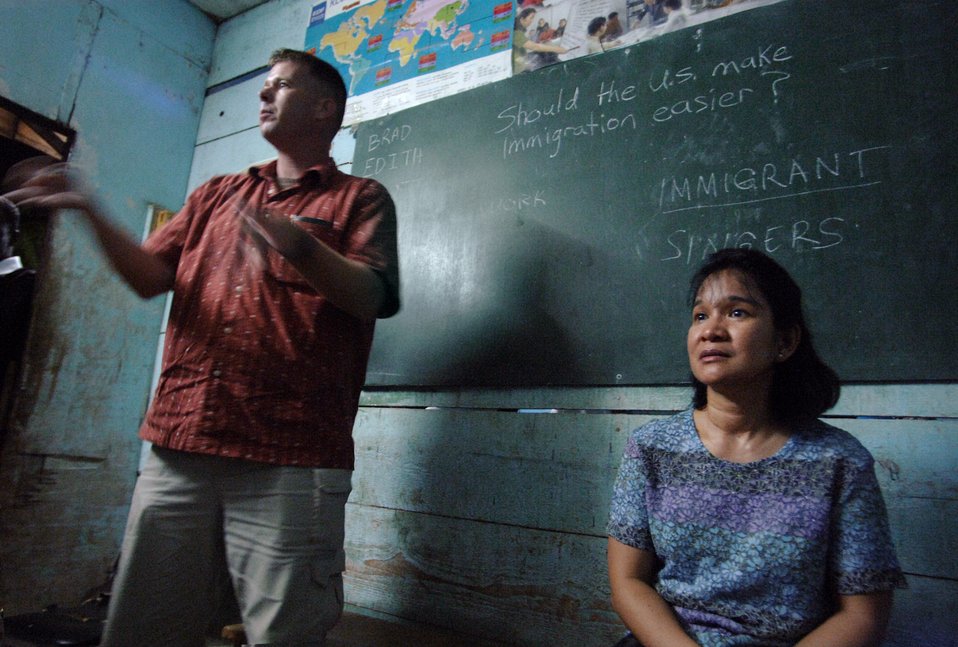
Americans, Djiboutians build relationships

Air Force Senior Master Sgt. Editha Garcia and Navy Petty Officer 1st Class Brad Hysell, who are deployed to Camp Lemonier, Djibouti, volunteer off-duty time to facilitate an English discussion forum with local students at the Horsed Private School of English. The students are interested in learning about American culture and improving their English speaking skills.